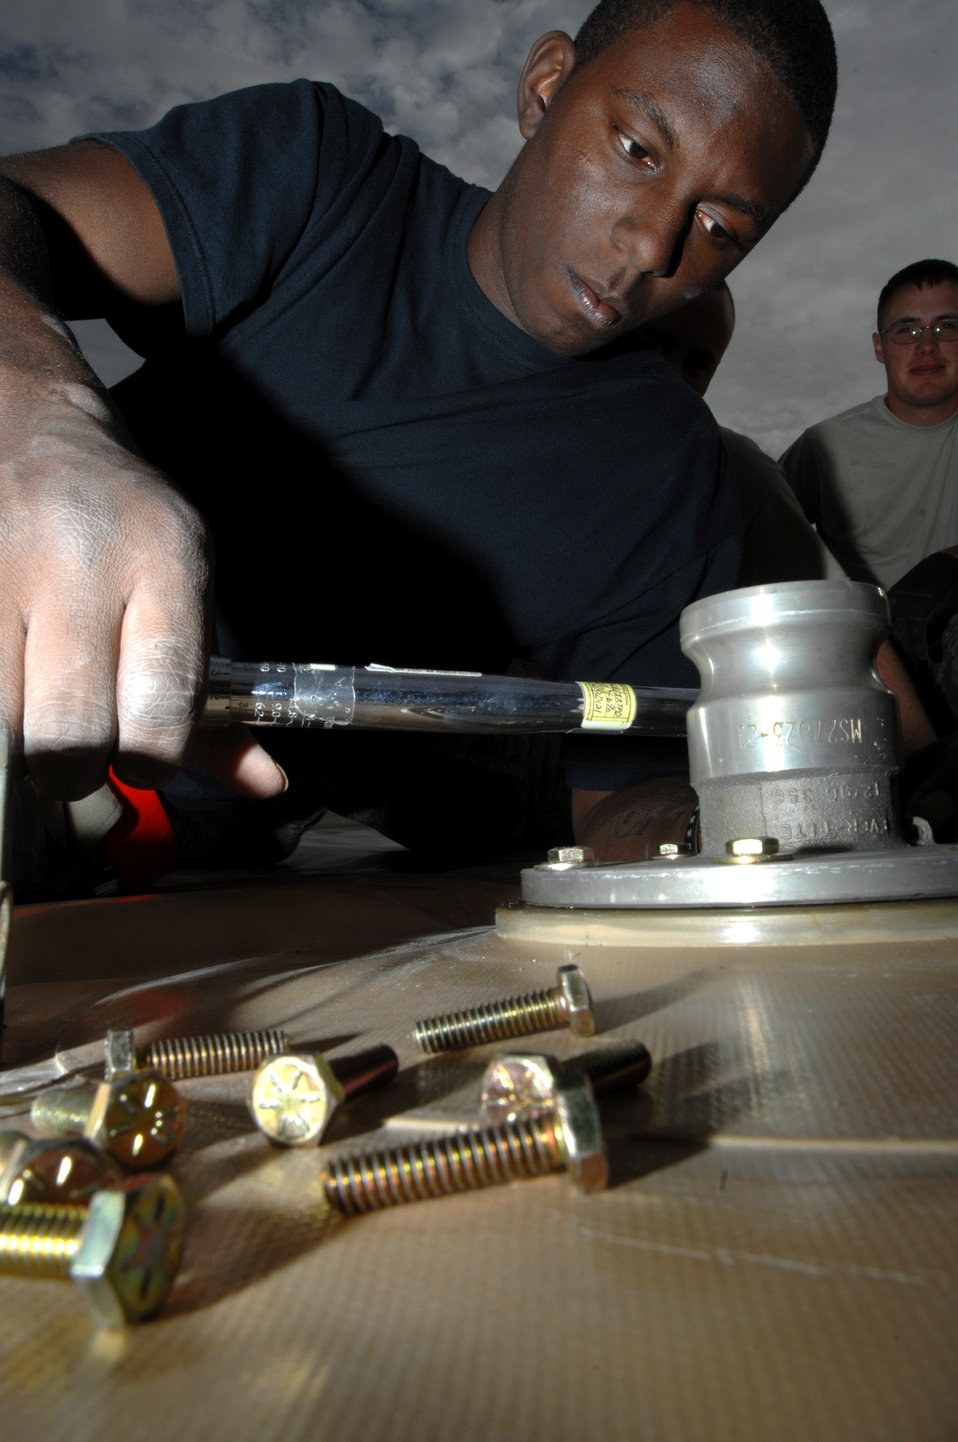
Completing a bladder transplant

Senior Airman Dafinus Harris torques the bolts on a connection port on a new fuel bladder Dec. 3 at Ali Base, Iraq. Airmen from the 407th Expeditionary Logistics Readiness Squadron fuels shop periodically replace fuel bladders to prevent ruptures. The new bladder can hold up to 50,000 gallons of fuel. Airman Harris is deployed from Kadena Air Base, Japan.